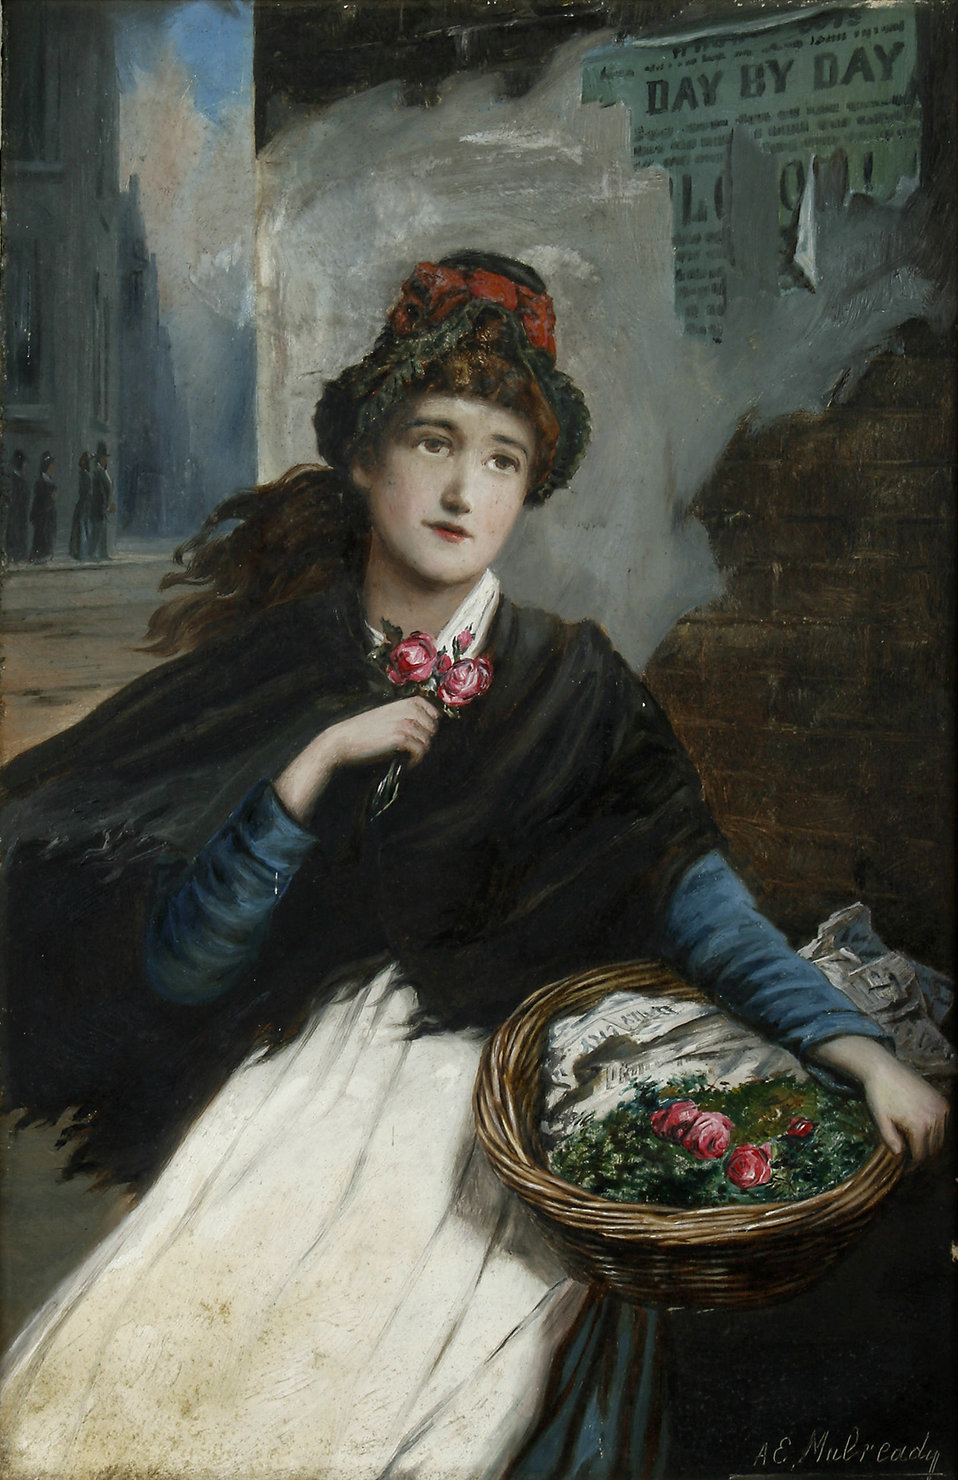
Augustus Edwin Mulready Selling out